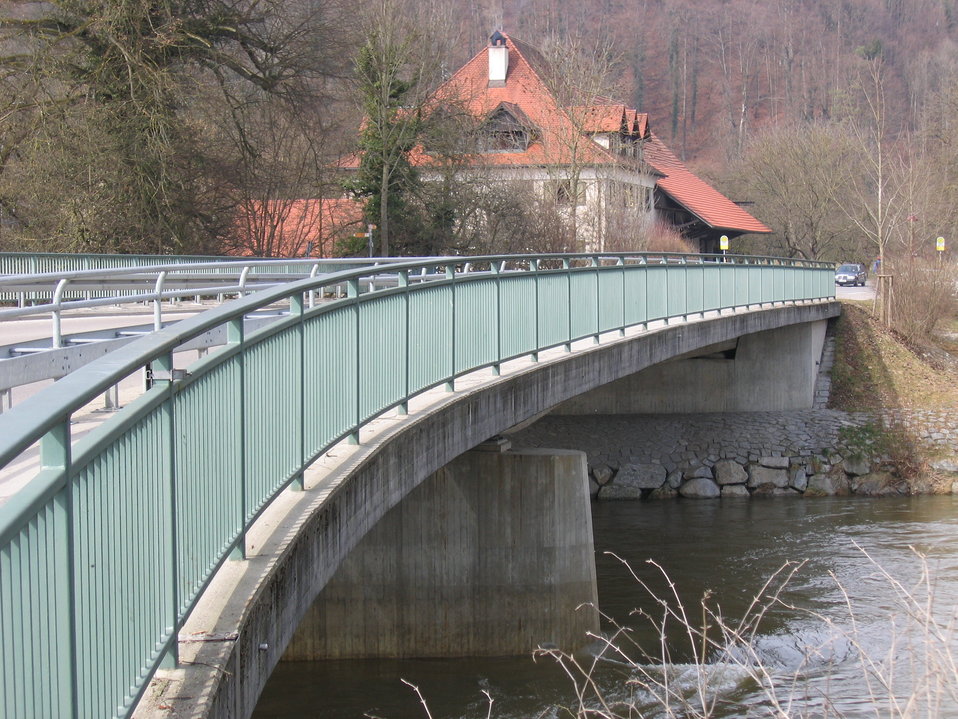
Deutsch: Deutschland - Baden-Württemberg - Bodenseekreis - Kressbronn - Ortsteil Gießemnrücke: die 'Gießenbrücke', im Hintergrund das 'Alte Zollhaus'